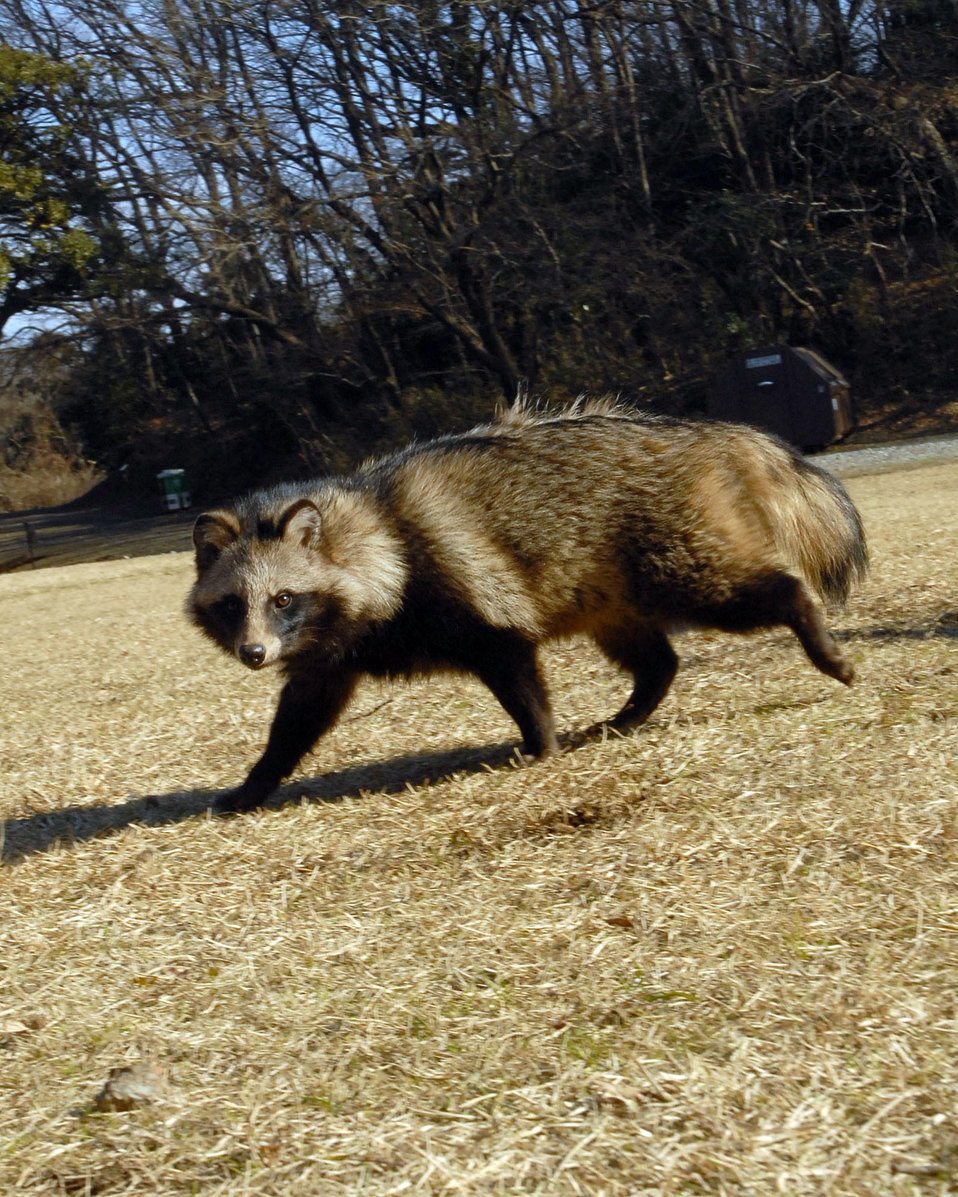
Yokota trespassers caught, detained, released

This raccoon dog was captured Jan. 6 on base and released Jan. 8 in a forest at the Tama Hills Recreation Area on Yokota Air Base, Japan. Members of the 374th Civil Engineer Squadron pest management office are responsible for catching and relocating wild animals found on the base, keeping the airfield clear and the pet population safe.